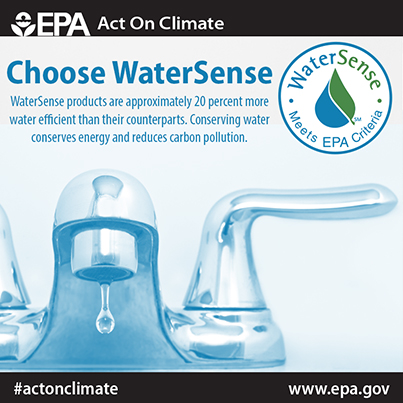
Choose WaterSense

Have some sense. WaterSense that is. The average household can #ActOnClimate while saving 500 gallons of water a year!